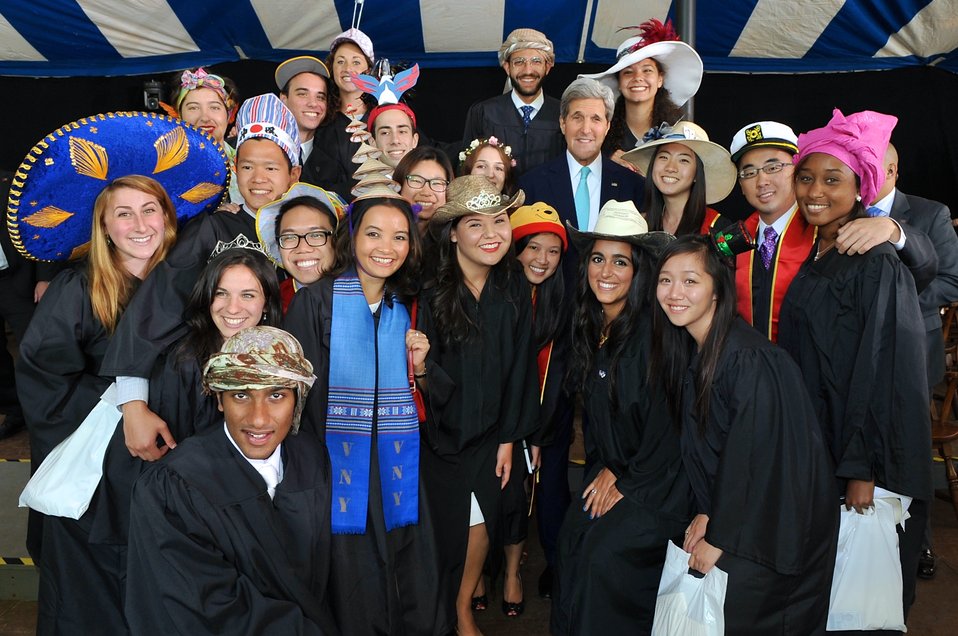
Secretary Kerry Poses With Yale University Seniors After Class Day Ceremonies

U.S. Secretary of State John Kerry poses with a group of Yale University seniors after the Class of 1966 graduate addressed the 2014 Class Day ceremonies in New Haven, Connecticut, on May 18, 2014.